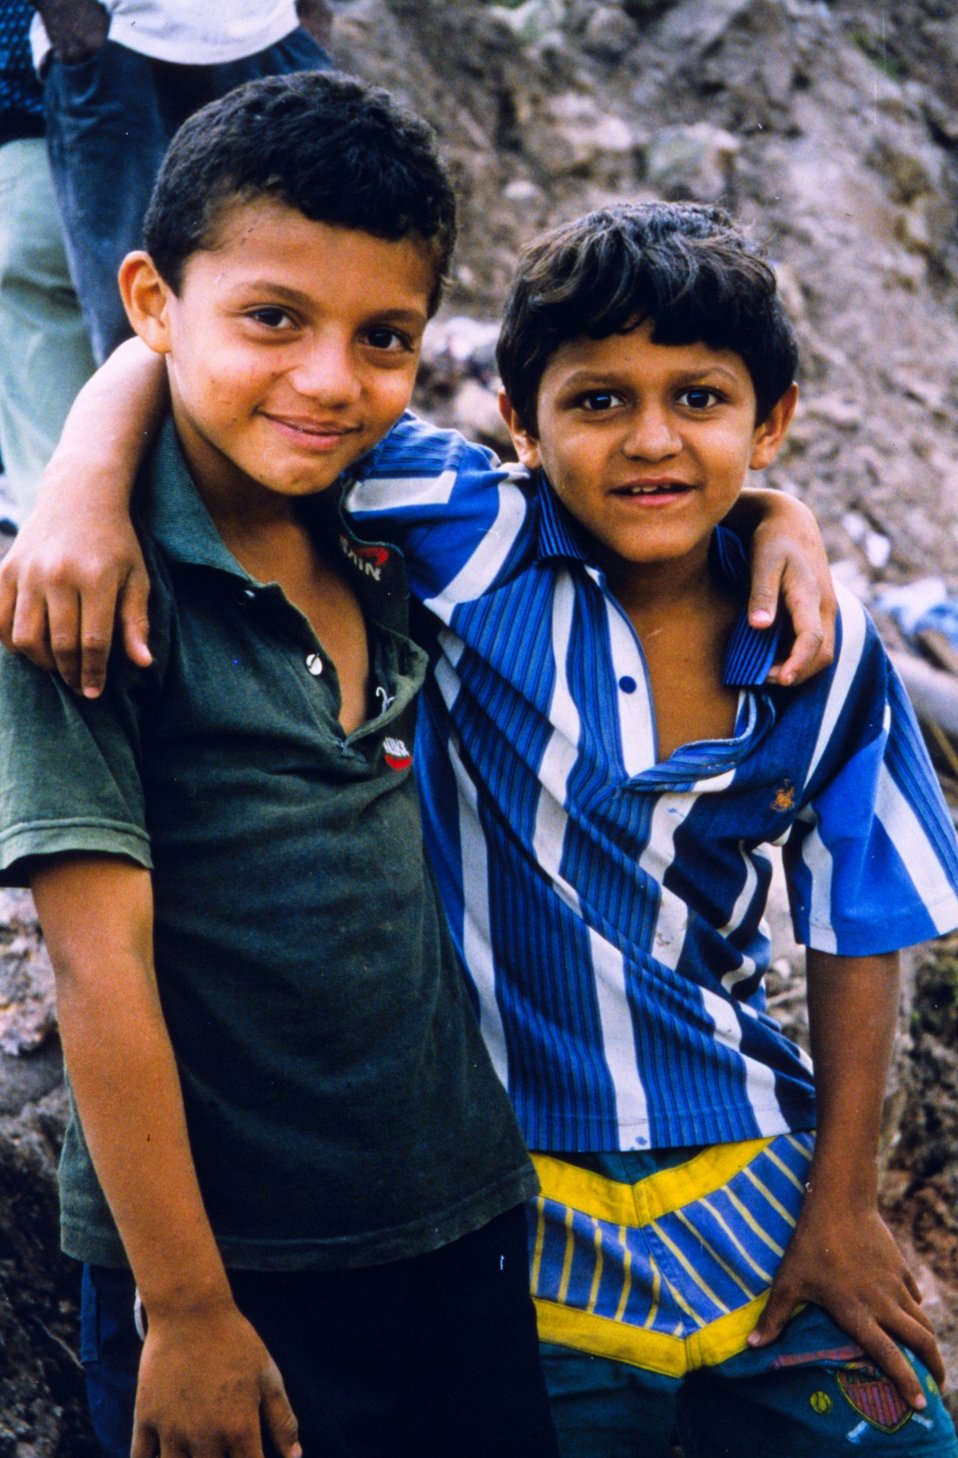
Pals through it all in the aftermath of Hurricane Mitch. Over 9,000 deaths and 9,000 missing were attributed to Mitch making it the second most deadly hurricane in history ranking only below a 1780 hurricane in the Lesser Antilles.